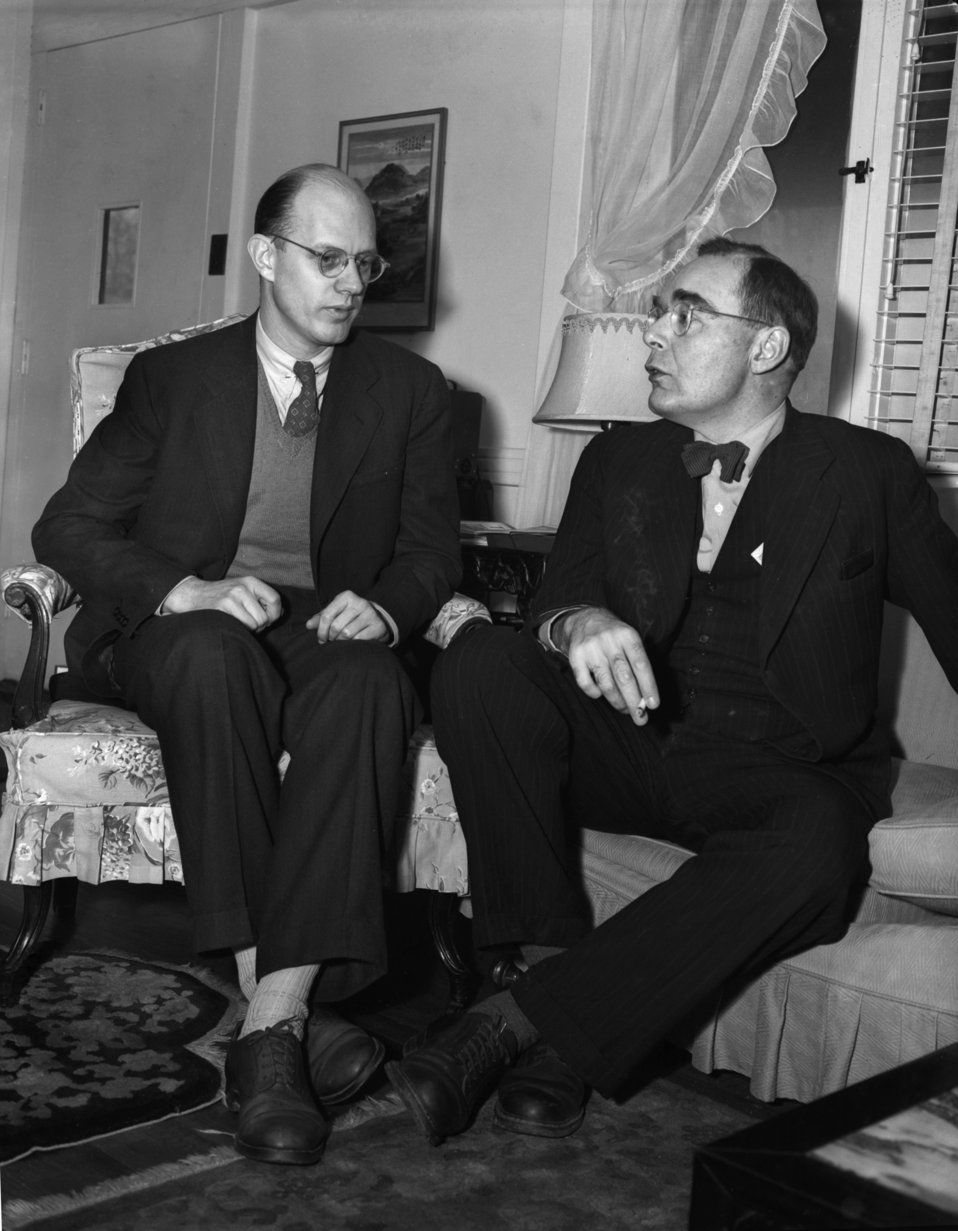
Dr. Frederick Seitz and Dr. H.A. Kramers Oak Ridge

3226-2 DOE photo Ed Westcott Oak Ridge Tennessee 1-6-1947